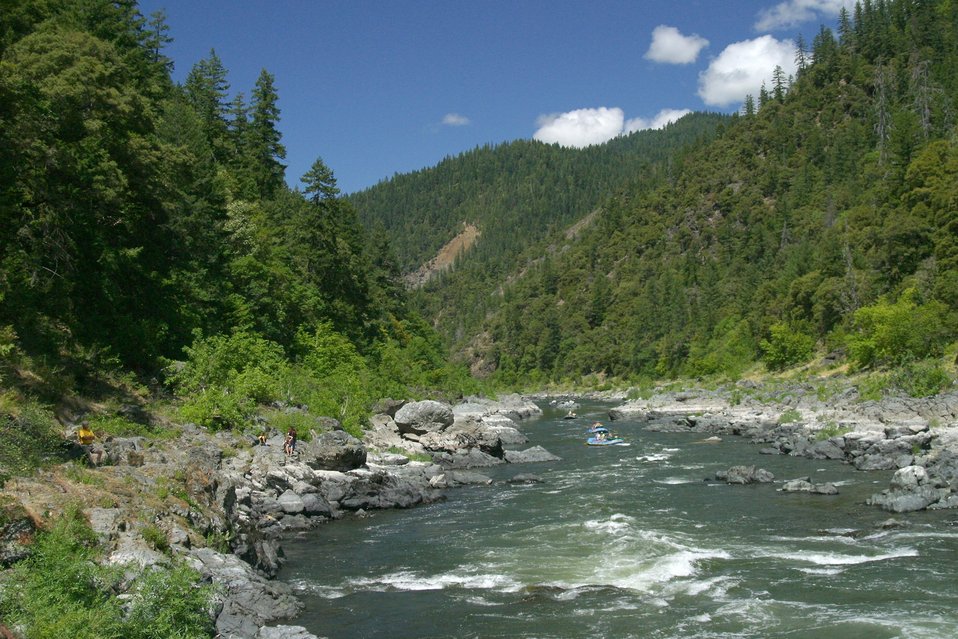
Looking down riverat Rainie Falls